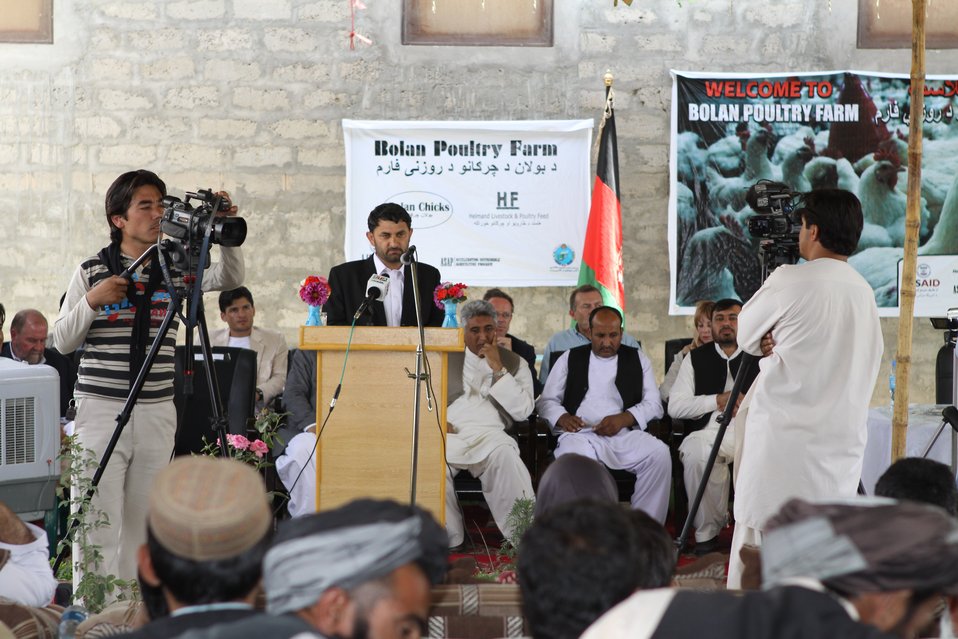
Bolan Poultry Farm